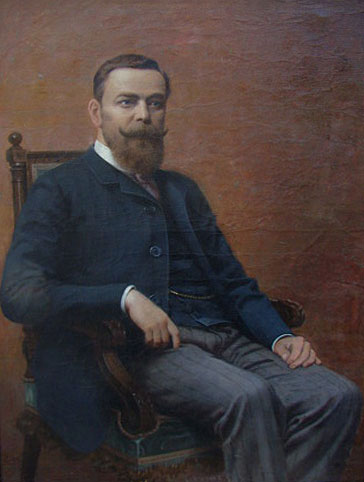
Espa√±ol: Pintura de alfredo valenzuela Puelma